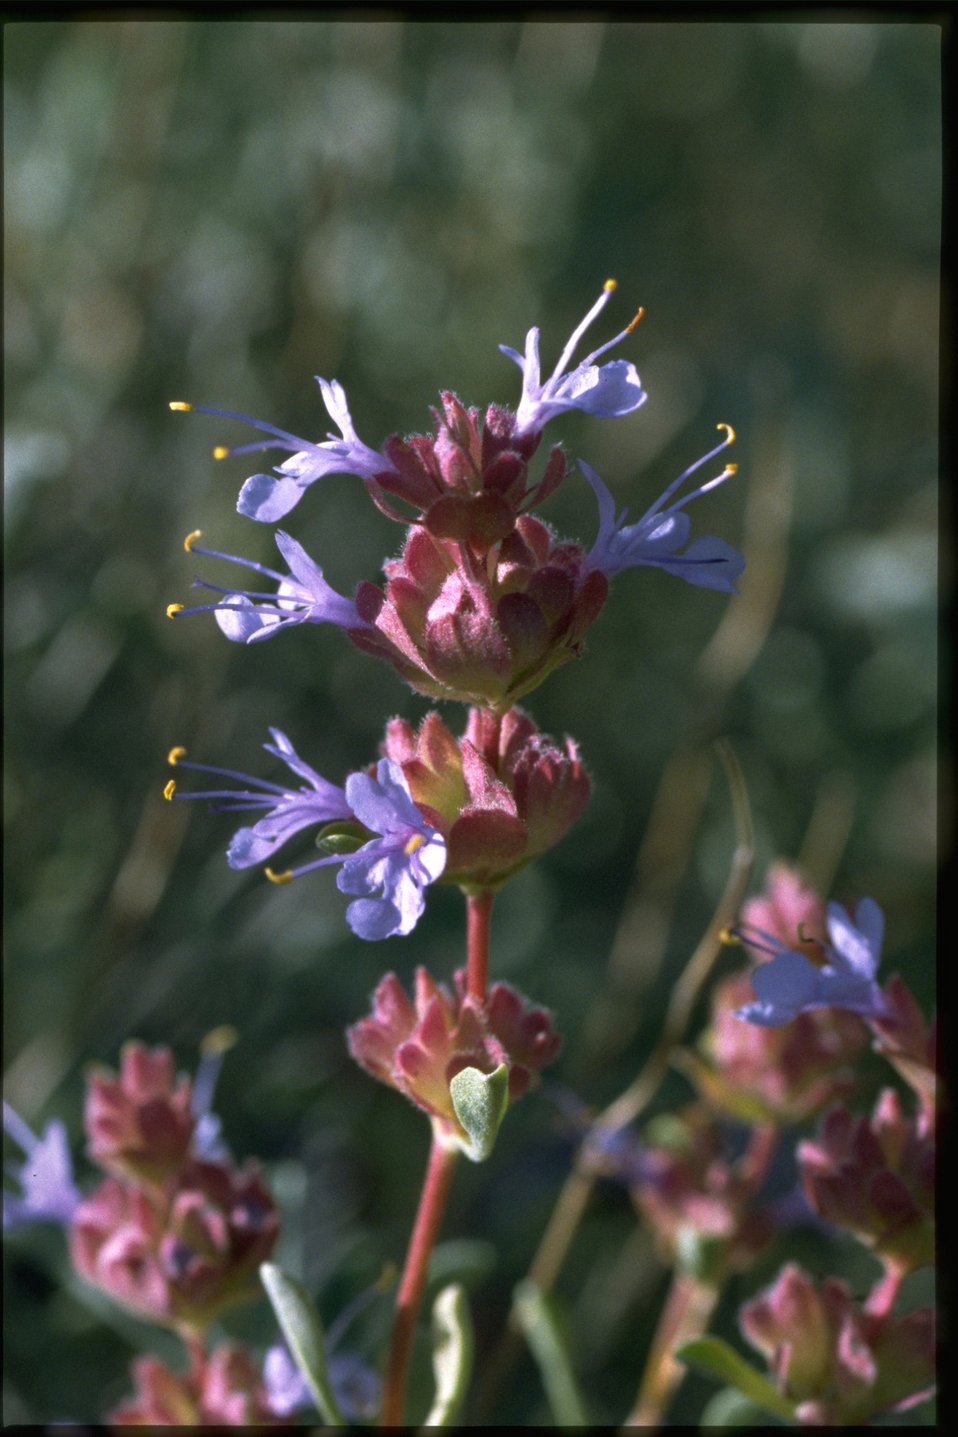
Medium shot of Salvia dorrii var gracilior.